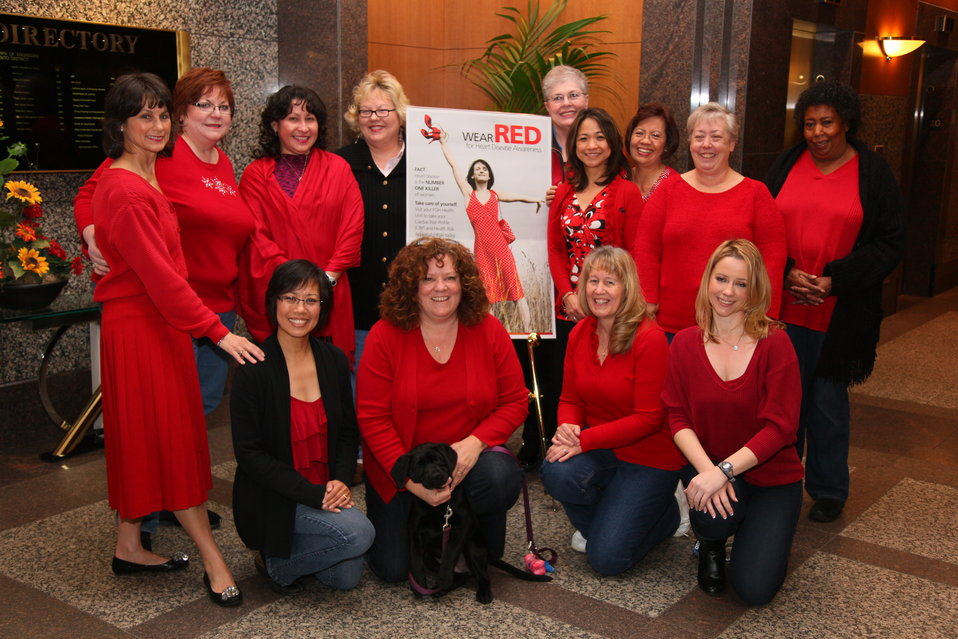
Heart Disease Awareness

Heart disease is said to be the number one killer of women—causing more deaths among women than all forms of cancer. Employees from U.S. Army Corps of Engineers Sacramento District are showing their support by wearing red on Feb. 3, 2012—the first Friday of American Heart Month. (From left to right) Back: Jan Luoma, Raydine Raab, Jellies Machel, Patti Adair Ahle, Mary Schwarz, Ofelia Sarmiento, Bella Almaraz, Peggy Lentz, Jacquelyn Smith. Front: Monina Isaac, Holly Conrad with Katana, Roxanne Bump, Elizabeth Henson.